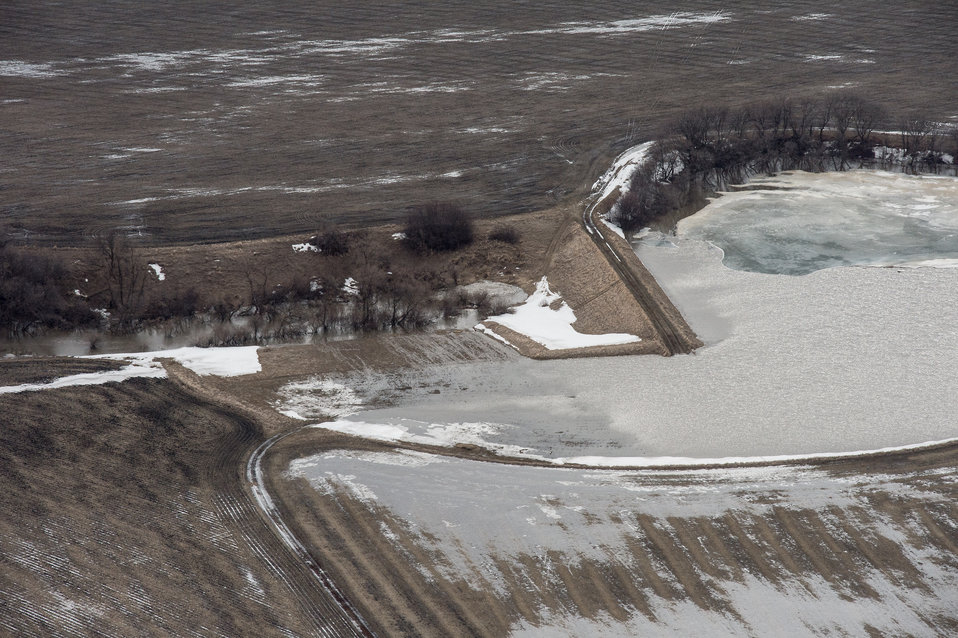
Flooding of Morris Dam, in Pembina County, ND, part of the Red River basin, on Wednesday, May 1, 2013. For information about this and other programs from the USDA Red River Basin Initiative (RRBI) please see www.mn.nrcs.usda.gov/news/features13/RRBI.html.